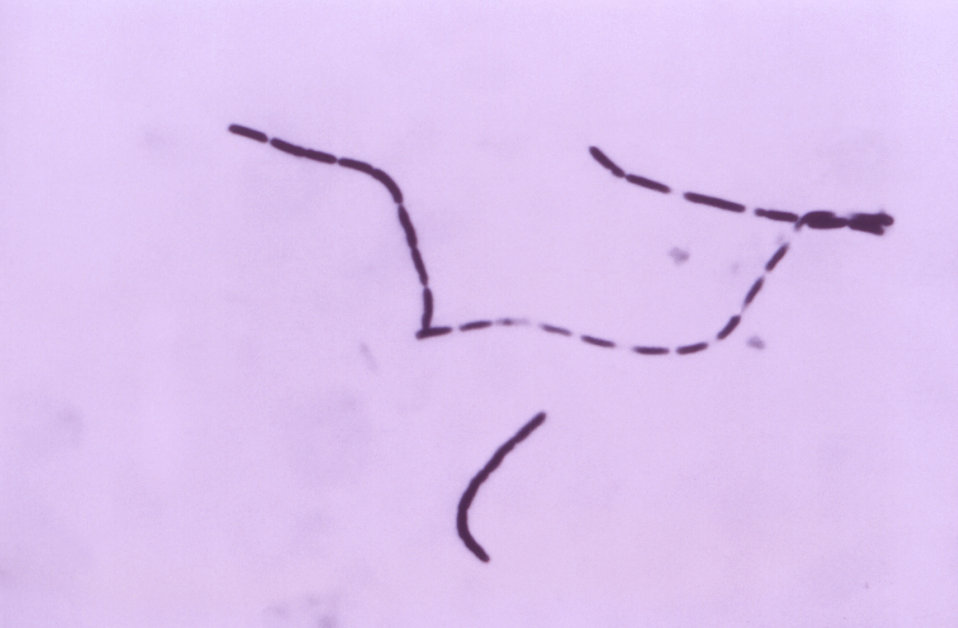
Magnified 956X, this Gram-stained photomicrograph depicted numbers of the Gram-positive Clostridium novyi type B bacteria, which had been cultivated in chopped meat medium, over a time period of 24 hours.